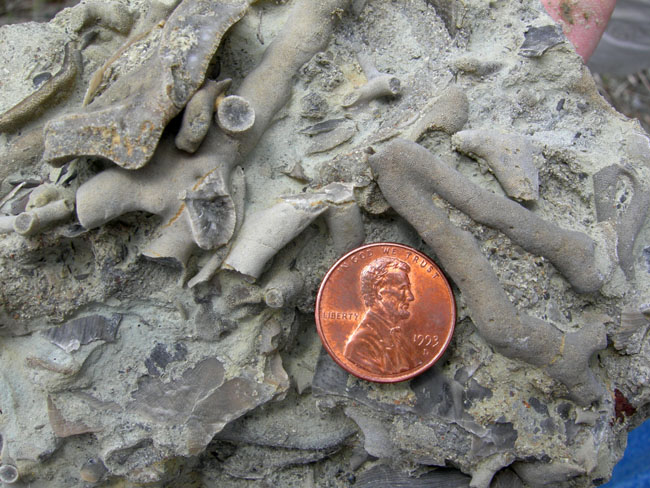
Ordovician bryozoans from Indiana.